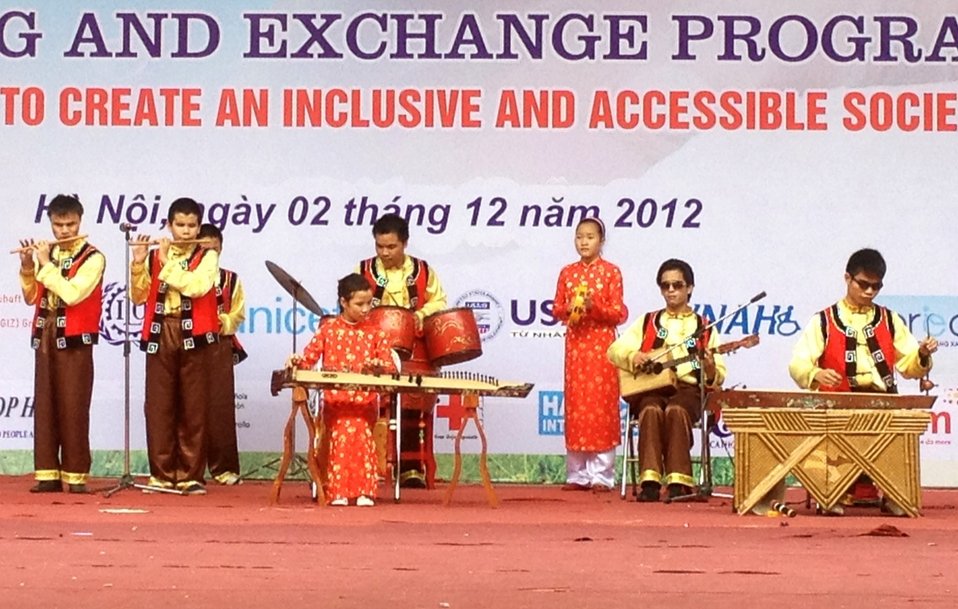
USAID joins celebration of International Day of Persons with Disabilities in Hanoi, Vietnam

December 2, 2012